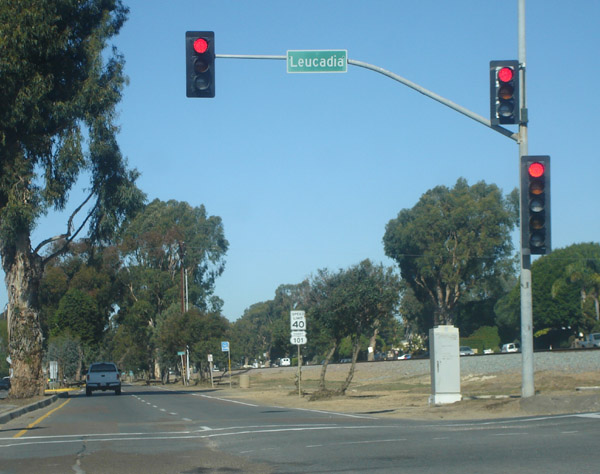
Photograph taken by me 1/20/06. Also on www.davidphogan.com/sdroads